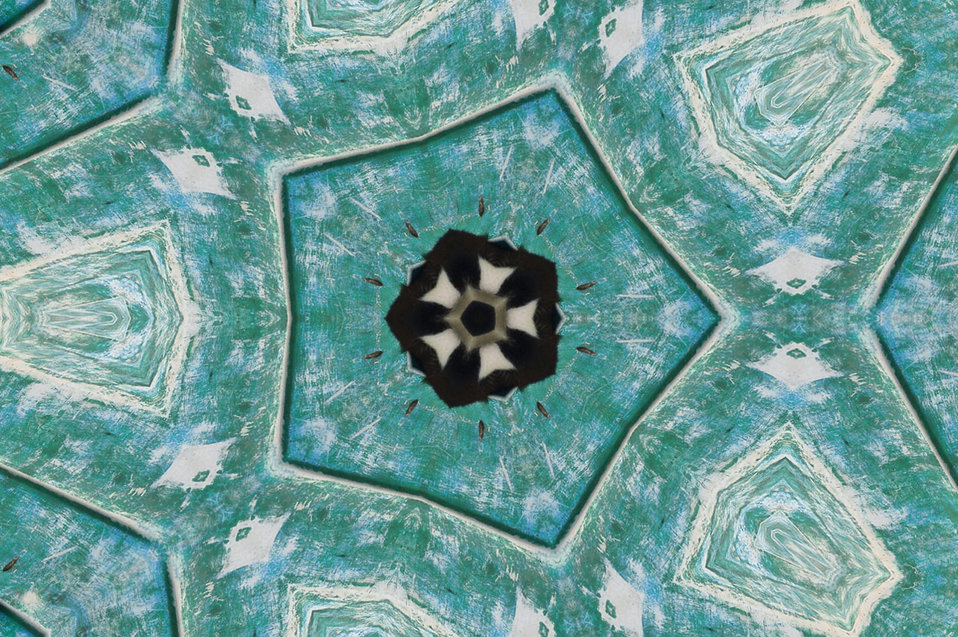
Crystal mandala - turquoise, blue, white and black.